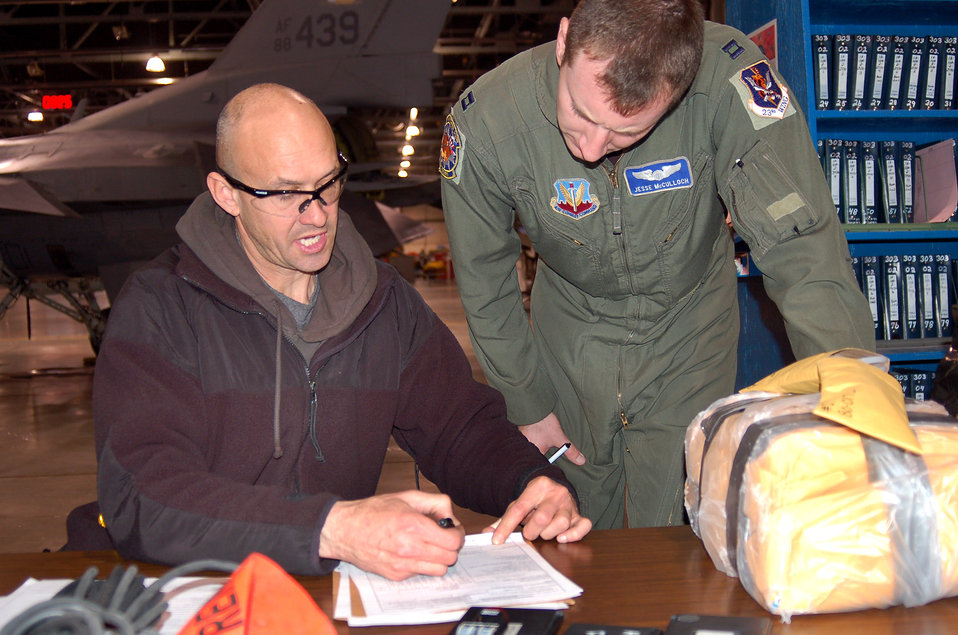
Maintenance unit completes upgrade of 100th A-10

Andrew Selph and Capt. Jesse McCulloch discuss paperwork details that will send A-10 Thunderbolt II aircraft 80-0172 to Moody Air Force Base, Ga. The aircraft is the 100th A-10 to receive the Precision Engagement modification installed by the 571st Aircraft Maintenance Squadron at Hill Air Force Base, Utah, which will extend the its service life until 2028.